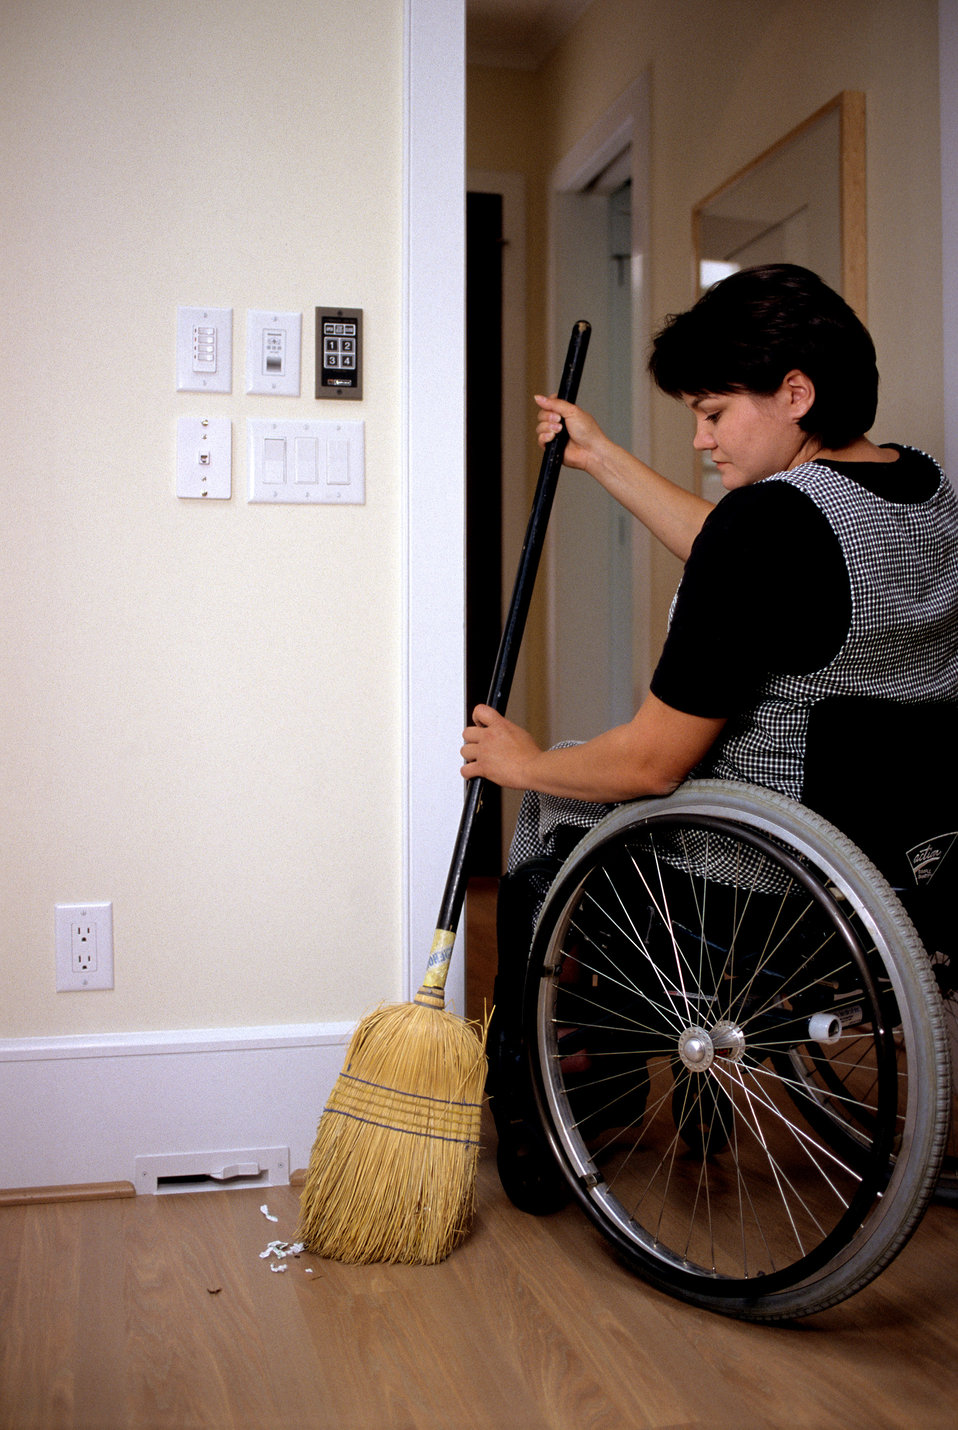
With broom in hand, this 2000 photograph showed a wheelchair-seated woman as she was sweeping some debris towards a floor level intake vent for a whole-house vacuum, otherwise known as an "automatic dustpan", which facilitated the act of house-cleaning for this mobility impaired individual. Such systems eliminated the need to pull a mobile unit which could be difficult and cumbersome for many, even for those who have no mobility impairments. See PHIL 9287 for a close-up view of the intake vent.The Center for Universal Design (CUD) is a national research, information, and technical assistance center that evaluates, develops, and promotes accessible and universal design in housing, buildings, outdoor and urban environments and related products. The Center's work manifests the belief that all new environments and products, to the greatest extent possible, should be usable by everyone regardless of their age, ability, or circumstance.